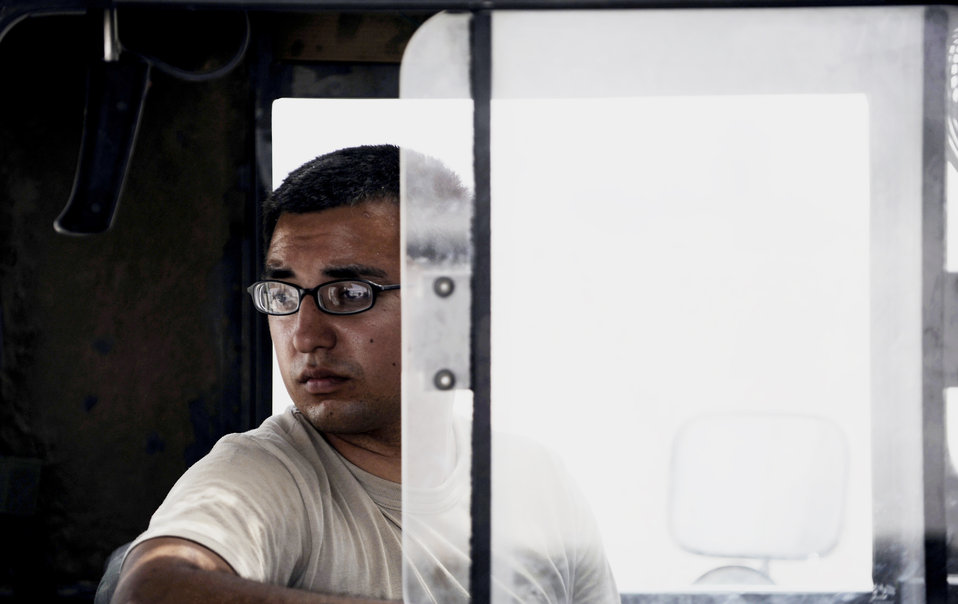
Airmen moving the mission in Afghanistan

Senior Airman Christian Mick loads pallets on an outgoing C-130 Hercules with a 60K-loader April 15, 2010, at Camp Bastion, Afghanistan. Airman Mick is an aerial porter assigned to the 451st Expeditionary Logistics Readiness Squadron Det. 1.